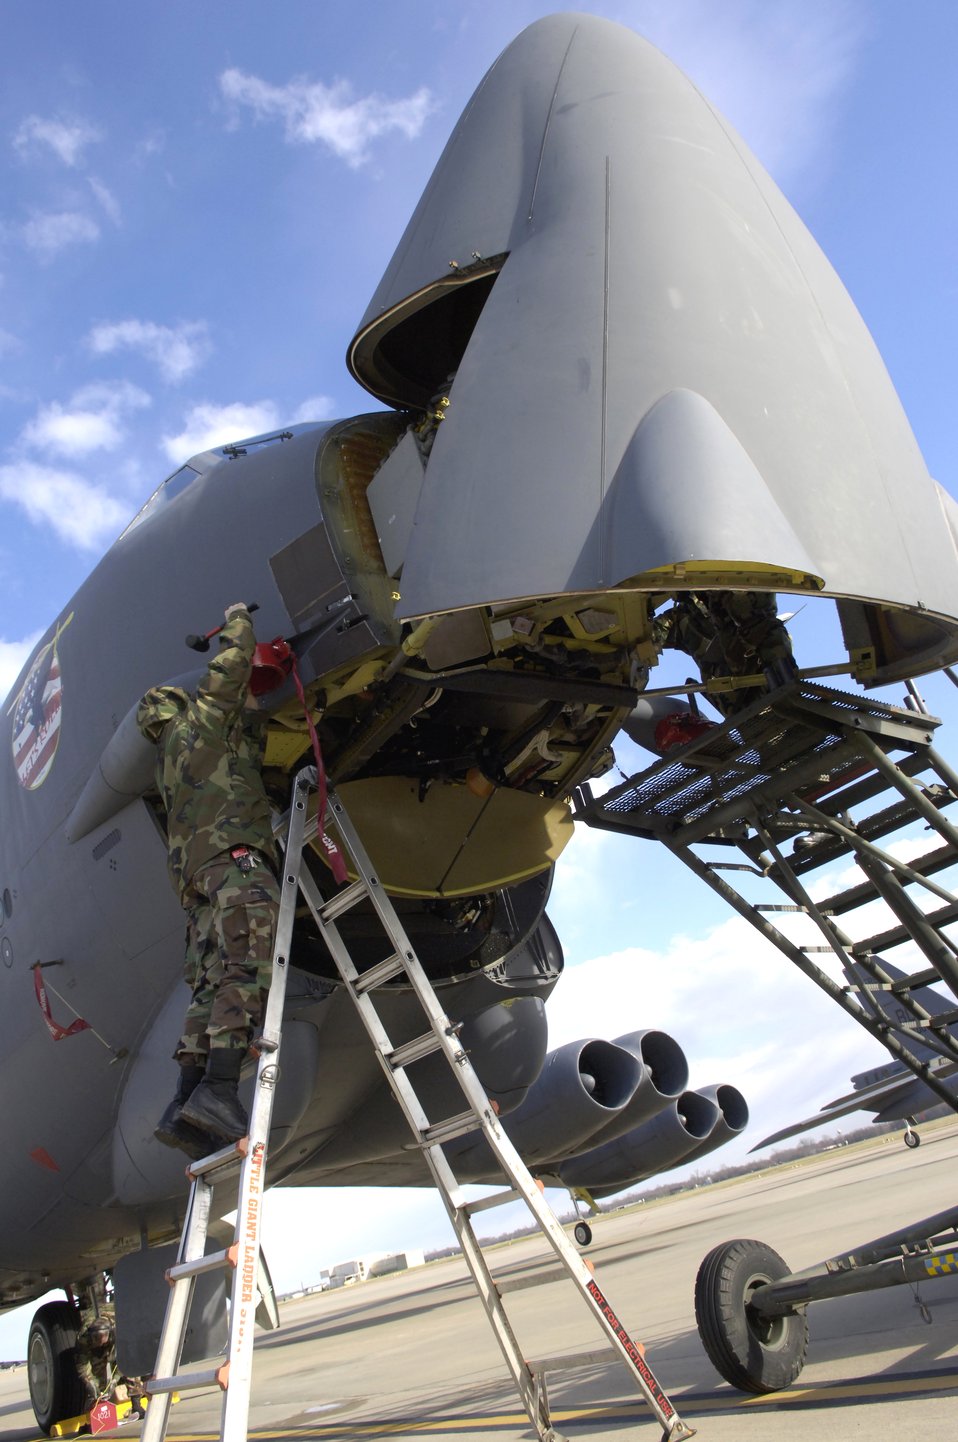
Stratofortress mission

BARKSDALE AIR FORCE BASE, La. (AFPN) -- Staff Sgt. Randall Daniel performs maintenance on a B-52H Stratofortress Feb. 4. Sergeant Daniel is a Reservist assigned to the 917th Aircraft Maintenance Squadron here.